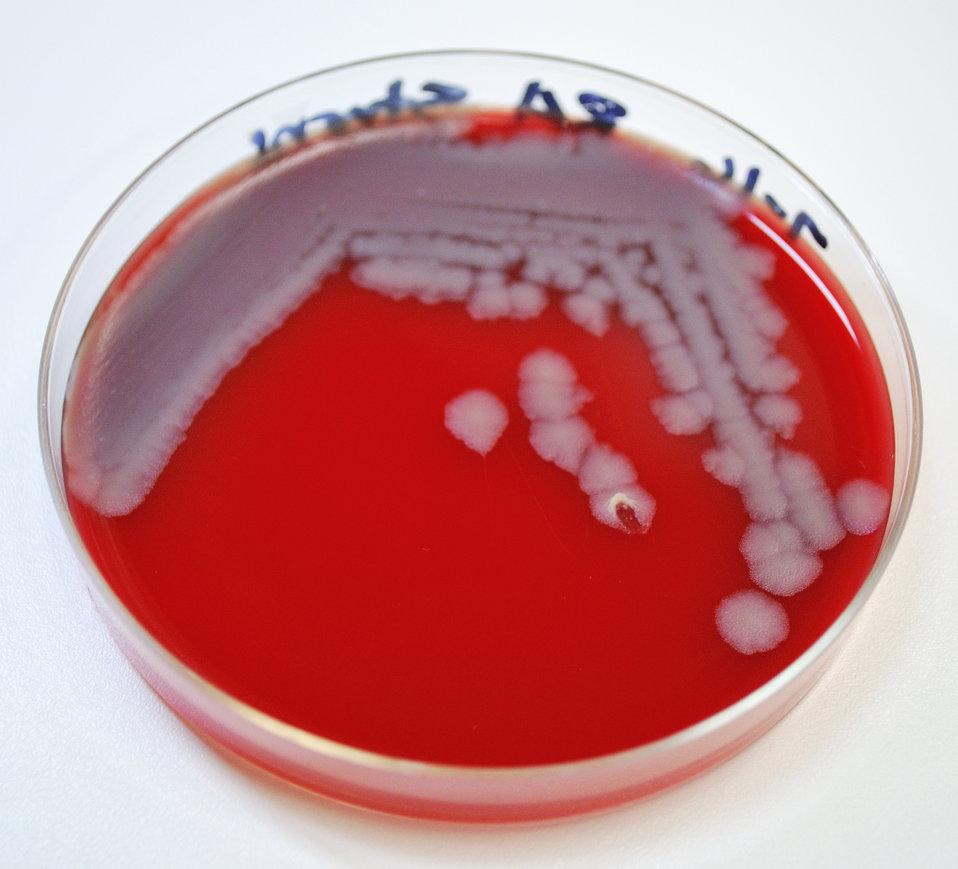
This image depicted Bacillus anthracis bacterial colonies, which had been allowed to grow on sheep's blood agar (SBA) for a 24 hour period. Note the classical appearance exhibited in the colonial morphology including a ground-glass, non-pigmented texture with accompanying 'comma' projections from some of the individual rough-edged colonies. In this particular view, you'll note that a 'tenacity test' had been performed using an iinoculating loop, which proved positive for B. anthracis, causing the 'colony to 'stand up' like beaten egg white'.What is anthrax?